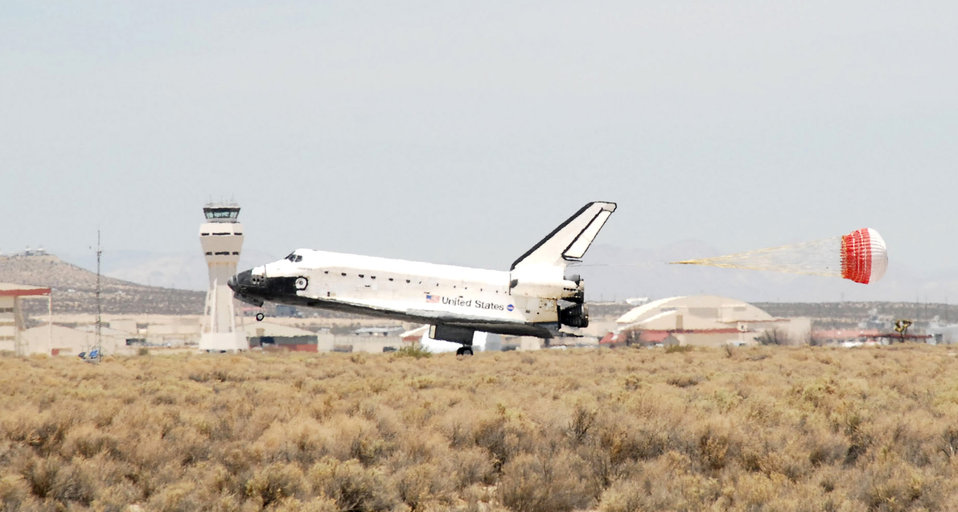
Space Shuttle Atlantis arrives at Edwards

Space Shuttle Atlantis, STS-117, performs a successful landing at Edwards Air Force Base, Calif., on June 22. The shuttle started its mission June 8 to perform maintenance on the International Space Station. STS-117 was the 21st mission to the space station and the 118th shuttle mission overall. The Atlantis landing marks Edwards' 51st shuttle landing. The next shuttle mission is scheduled to launch in August.